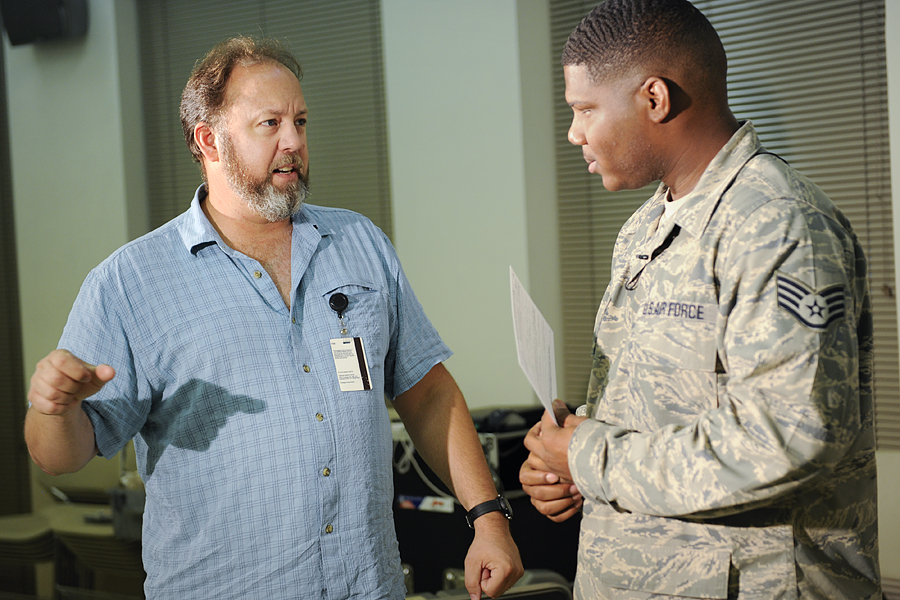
Holiday greets team

Erich Schwab walks Staff Sgt. Antwoin Prater through the process of filling out a holiday greetings card Sept 7, 2010, during a practice session at the Defense Media Activity – San Antonio. The card provides information used to determine the correct state and provides TV and radio stations with contact information to let family know when their greetings will air.